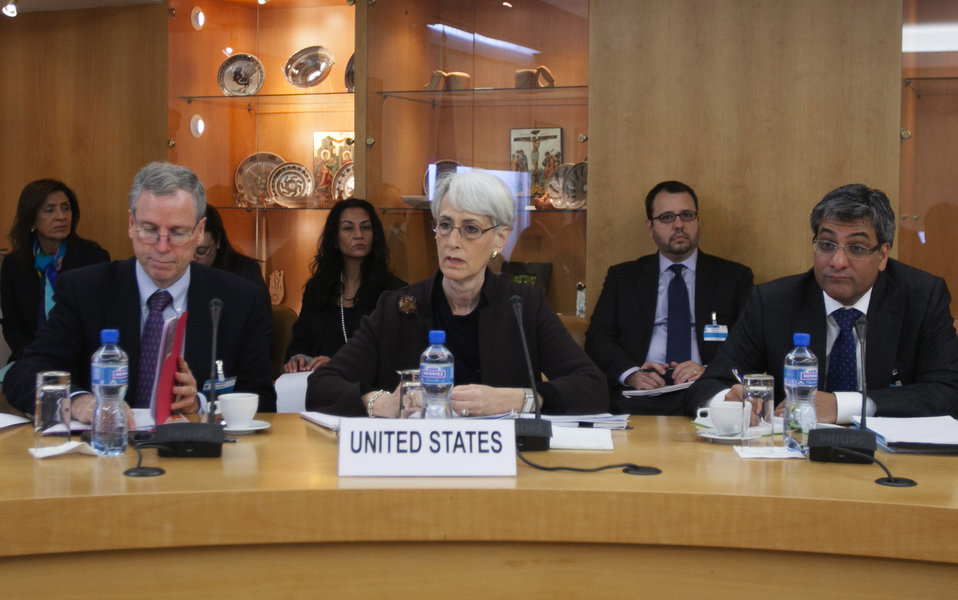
Under Secretary Sherman Leads the U.S. Delegation to the UN-Hosted Meeting on Syria

Under Secretary of State for Political Affairs Wendy R. Sherman leads the U.S. delegation to the UN-hosted meeting on Syria at the United Nations Offices in Geneva, Switzerland, on November 5, 2013.